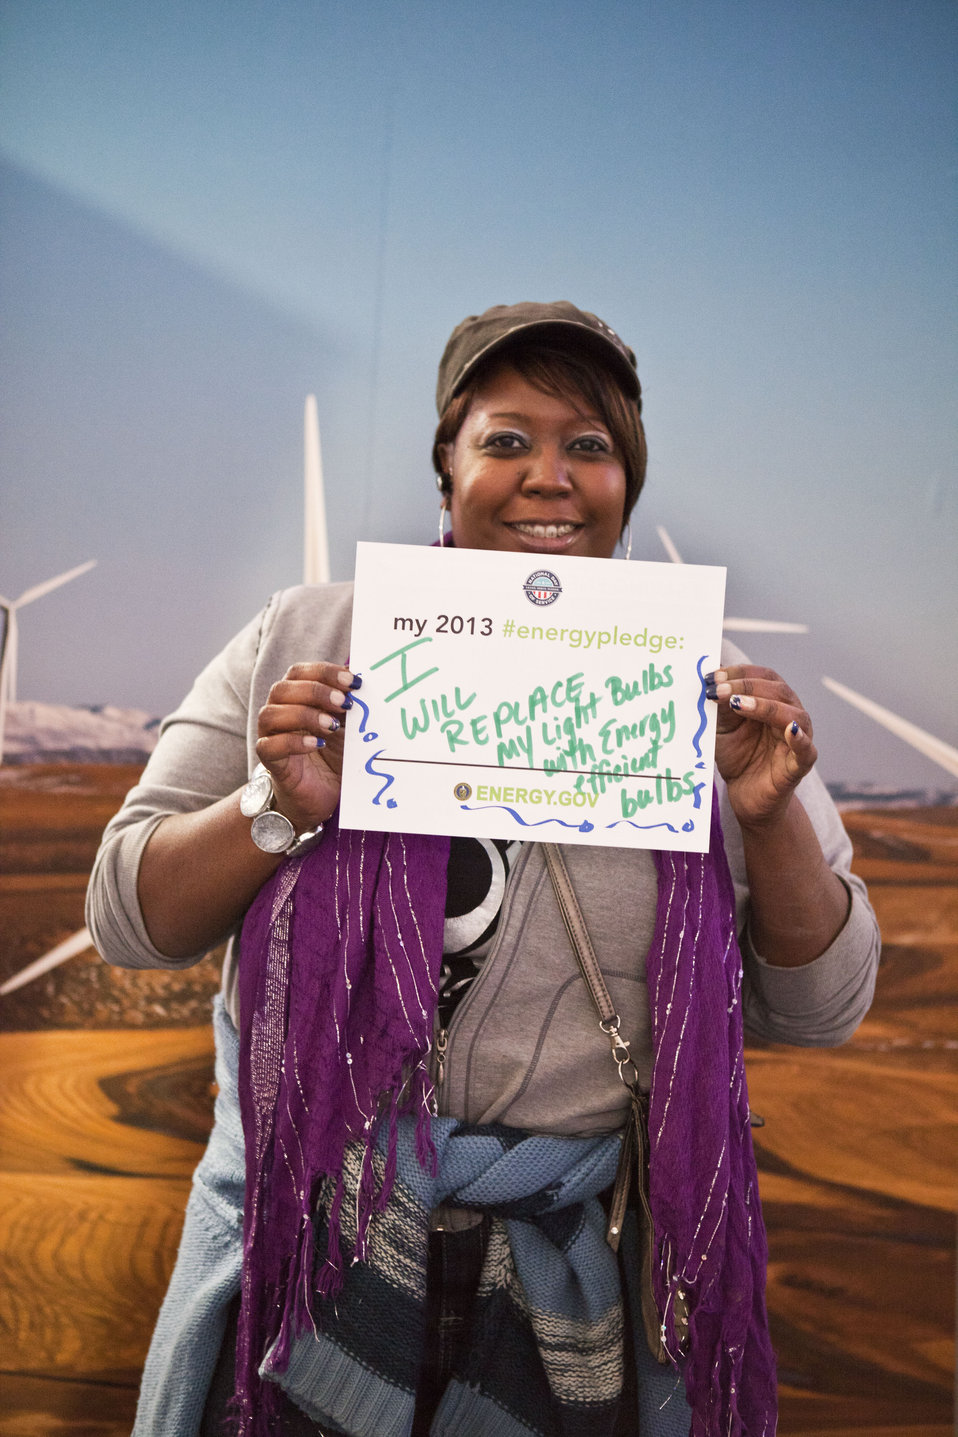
What's your #energypledge?